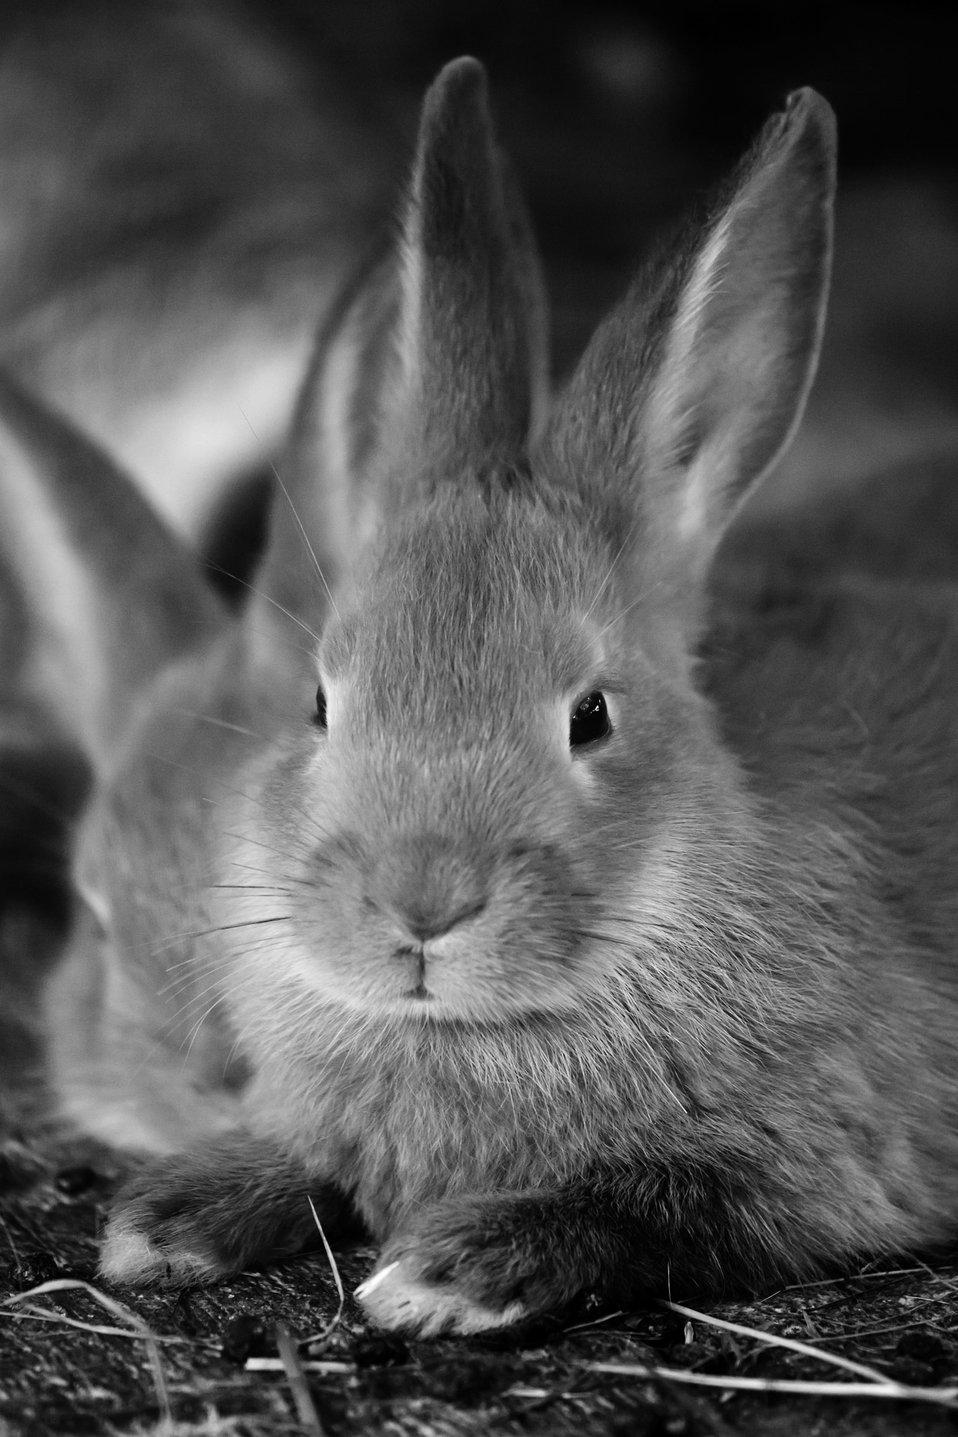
Bunny rabbit portrait in black and white.